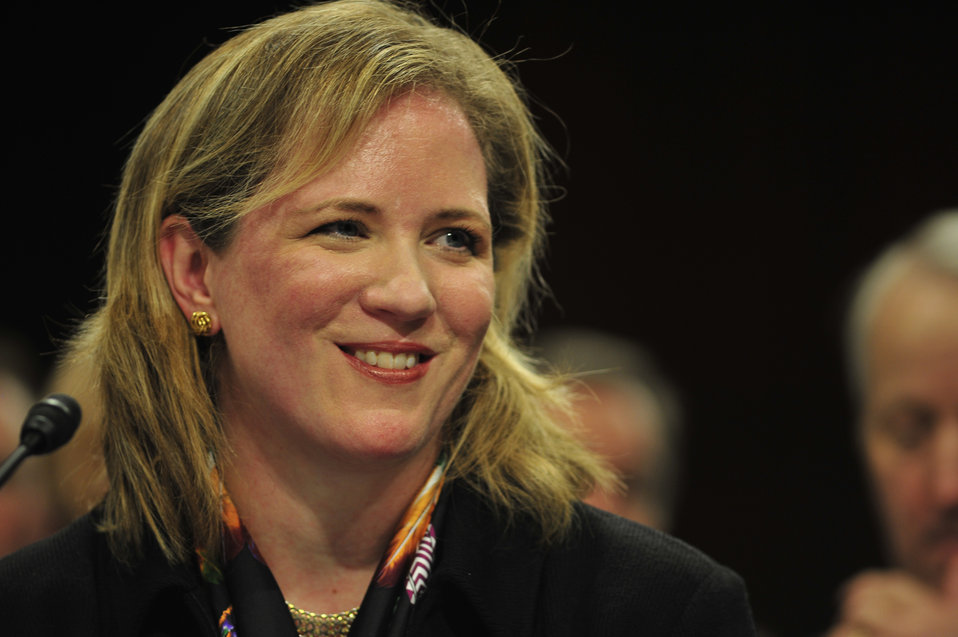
Air Force undersecretary nominee testifies

Erin Conaton, nominee for undersecretary of the Air Force, answers a question during a Senate Committee on Armed Services hearing Nov. 19, 2009, on Capitol Hill. If confirmed, Ms. Conaton will fill a position that has been vacant since 2007.